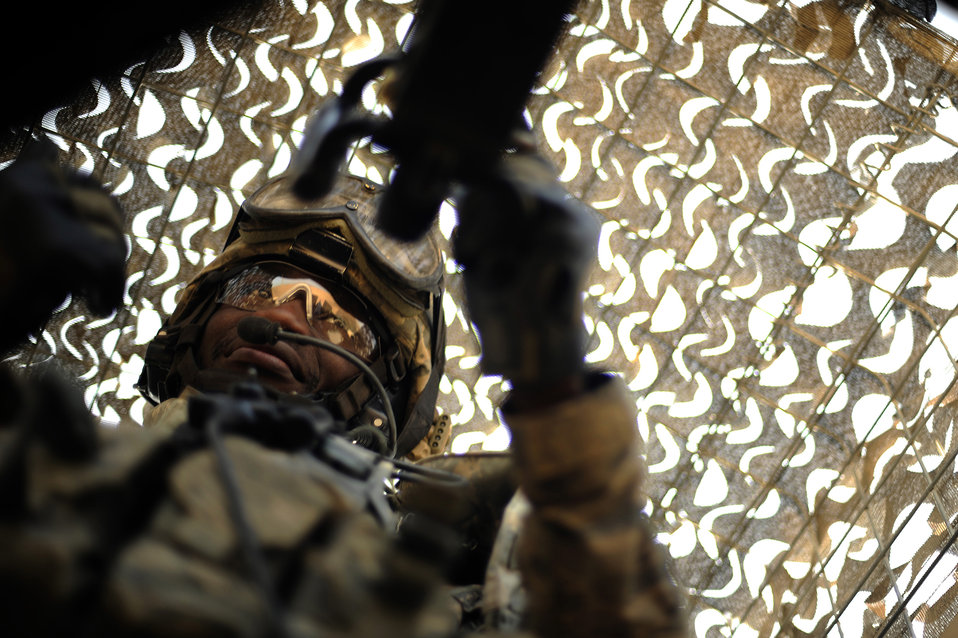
Airmen patrol outside to protect inside

Senior Airman Patrick Kelly test fires his .50 caliber machine gun prior to a force protection patrol Oct. 17, 2009, outside Joint Base Balad, Iraq. The 532nd Expeditionary Security Forces Squadron patrols to provide a security presence intended to deter anyone who would do harm to the people who live and work at the base. Airman Kelly is assigned to the 532nd ESFS.